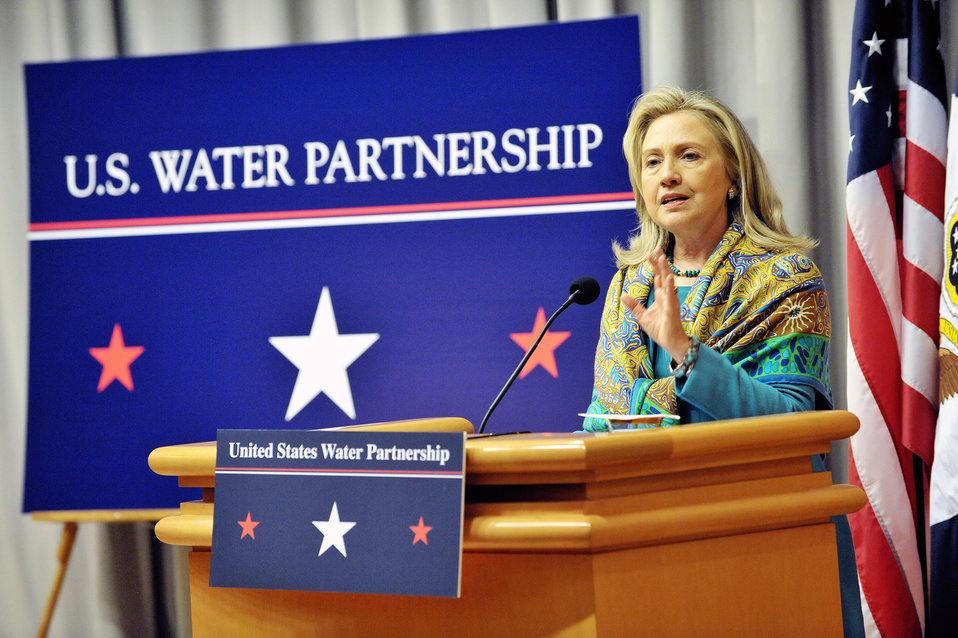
Secretary Clinton Delivers Remarks on World Water Day

U.S.Secretary of State Hillary Rodham Clinton delivers remarks on World Water Day from the Department of State in Washington, D.C. on March 22, 2012.